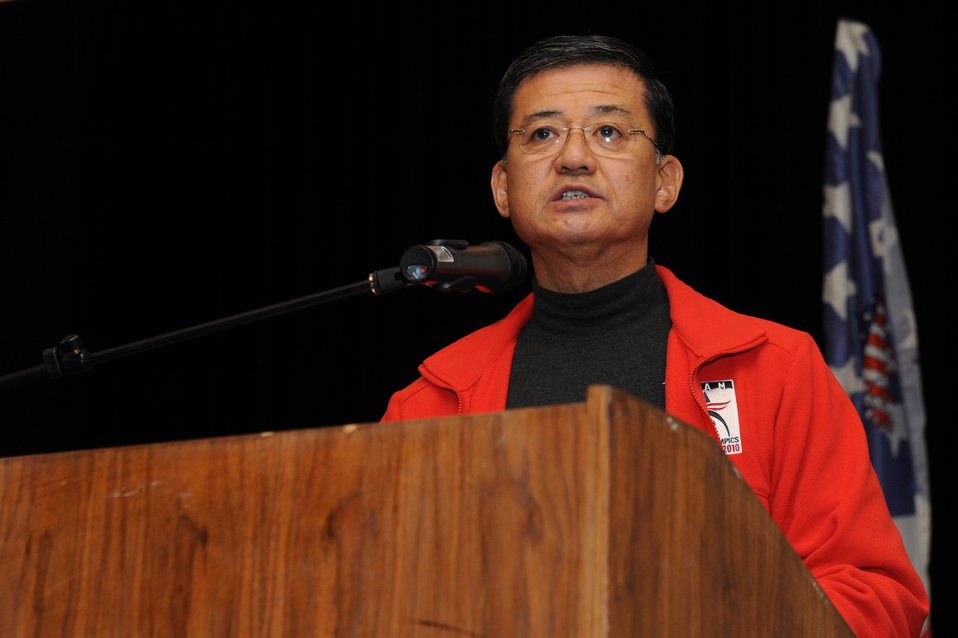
Winter Sports Clinic Opening Ceremony

Veterans Affairs Secretary Eric K. Shinseki opens the 24th National Disabled American Veterans Winter Sports Clinic March 28, 2010, in Snowmass Village, Colo. The event is sponsored by the VA Department and Disabled American Veterans.